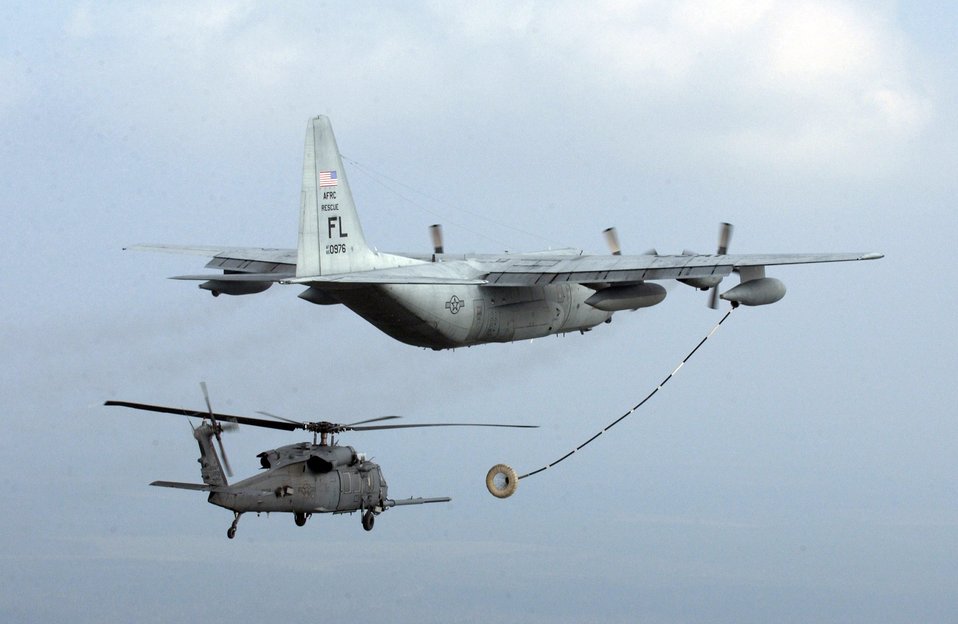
Search and rescue

RANDOLPH AIR FORCE BASE, Texas -- An Air Force Special Operations Command HC-130P refuels a HH-60 Pave Hawk helicopter in the sky over southern Louisiana. Air Force search and rescue crews have been searching for Hurricane Rita survivors. Its in-flight refueling capability allows the helicopter crews to continue search and rescue missions for several hours.